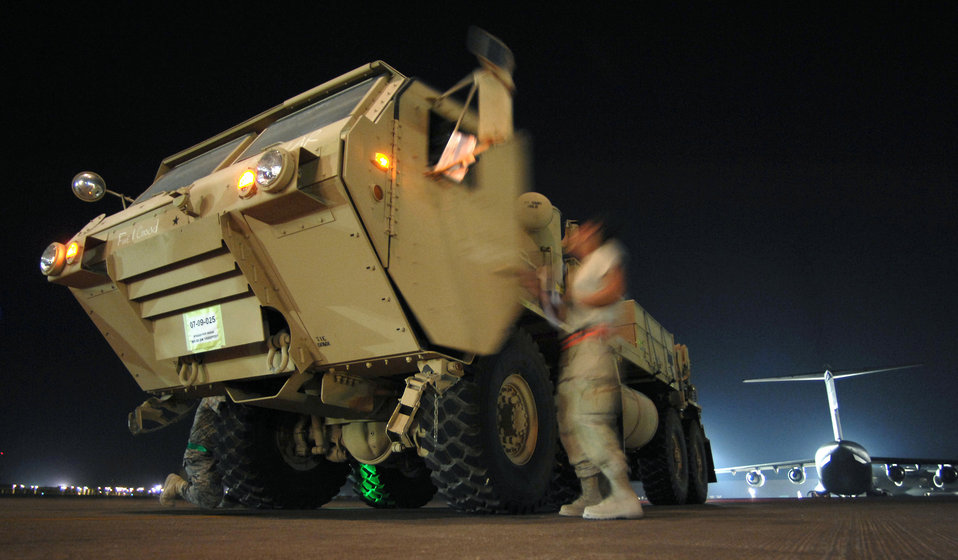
CENTAF Mobility director visits Airmen at Camp Djibouti

Airmen from the 8th Expeditionary Air Mobility Squadron prepare to load a 58,210 pound armored wrecker onto a C-17 Globemaster Sept. 30 in Southwest Asia. Air mobility in the U.S. Central Command area of operations makes it possible to move people and cargo where needed 24 hours a day, seven days a week.